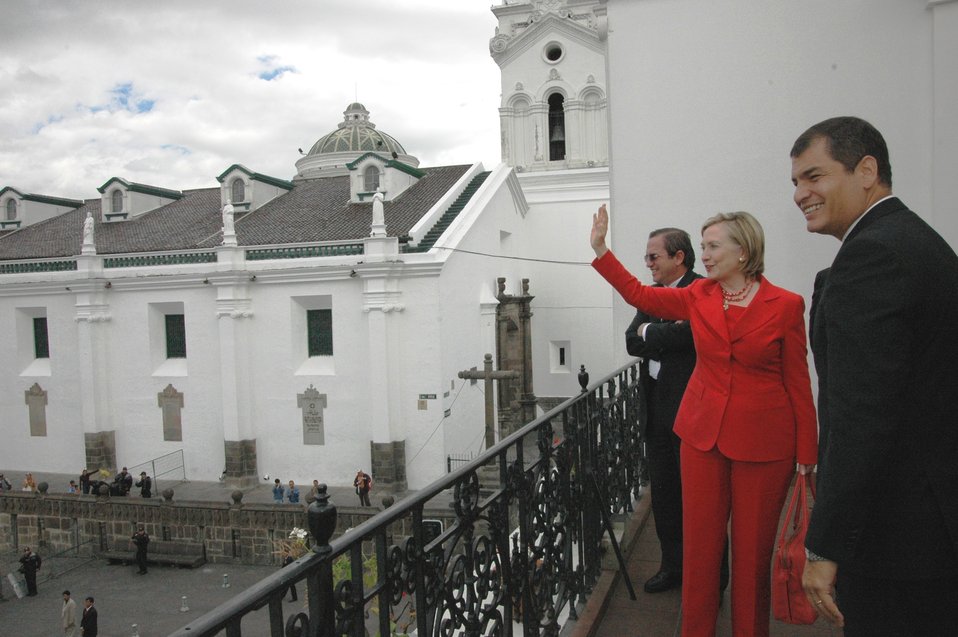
Ecuadorian Foreign Minister Patino, U.S. Secretary of State Hillary Rodham Clinton, and Ecuadorian President Correa Look Out Over Independence Square

Ecuadorian Foreign Minister Patino, U.S. Secretary of State Hillary Rodham Clinton, and Ecuadorian President Correa look out over the balcony of Carondelet Palace onto Independence Square in the historic center of Quito, Ecaudor, on June 8, 2010.